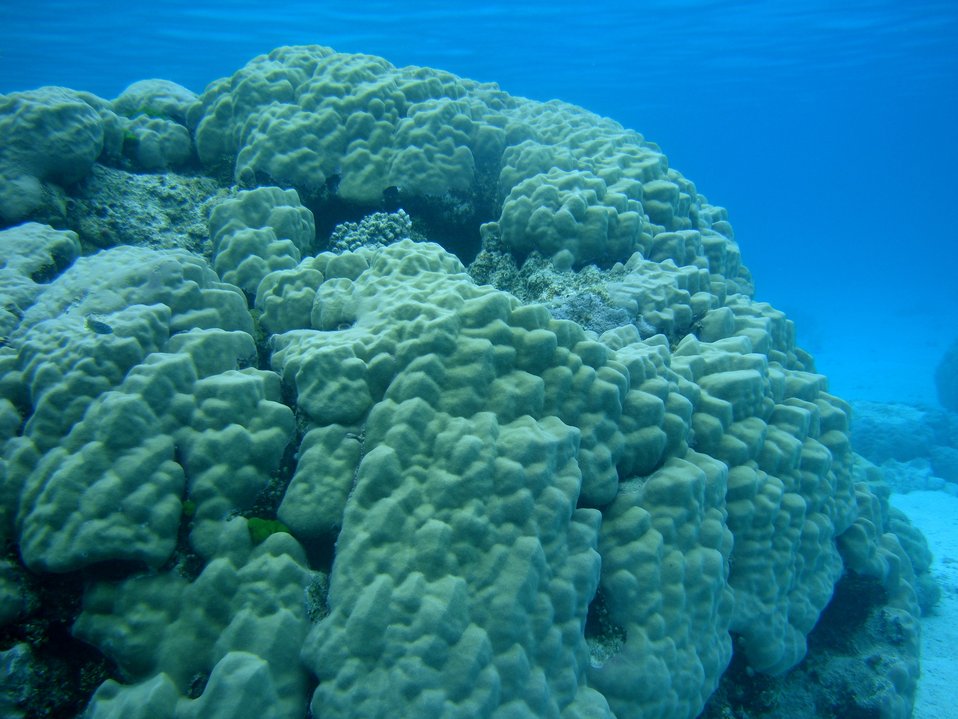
Poritidae coral Porites sp. massive coral dominating image